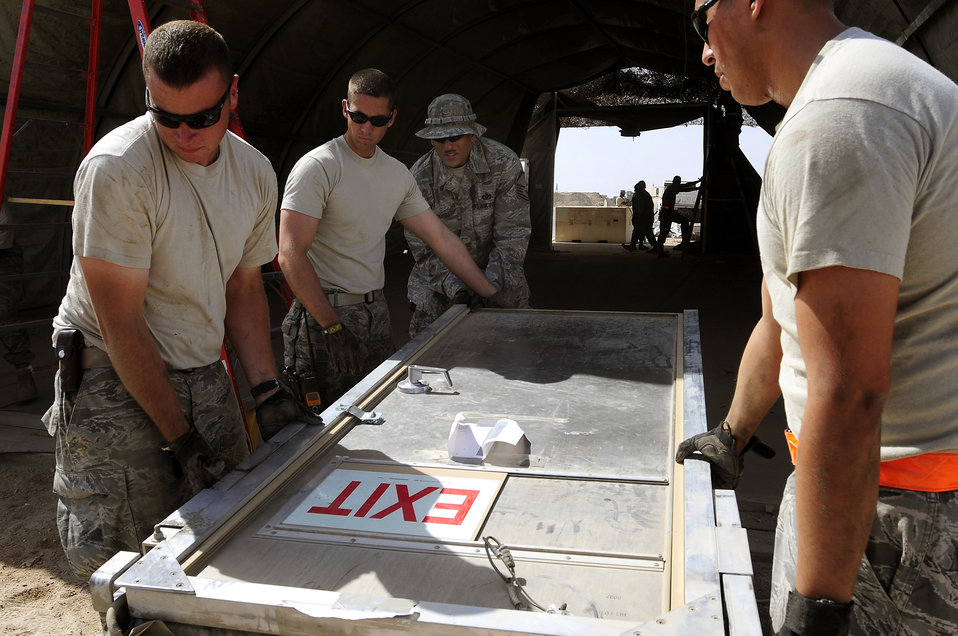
Reconstitution of materials supports fight, saves money

Members of the 407th Expeditionary Civil Engineer Squadron take down a tent structure Sept. 30, 2009, at Ali Base, Iraq. Squadron members are downsizing and consolidating material and equipment to send to U.S. warfighters in Afghanistan.